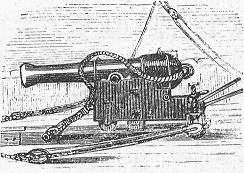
An illustration from Jules Verne's novel 'Journeys and Adventures of Captain Hatteras', part I: 'The English at the Noth Pole' drawn by Édouard Riou and/or Henri de Montaut. Polski: Ilustracja powieści Juliusza Verne'a 'Podróże i przygody kapitana Hatterasa', części I: 'Anglicy na Biegunie Północnym' autorstwa Édouarda Riou i/lub Henri de Montauta. Français : Jules Verne: 'Voyages et aventures du capitaine Hatteras - Les Anglais au Pôle Nord', Édouard Riou et Henri de Montaut.